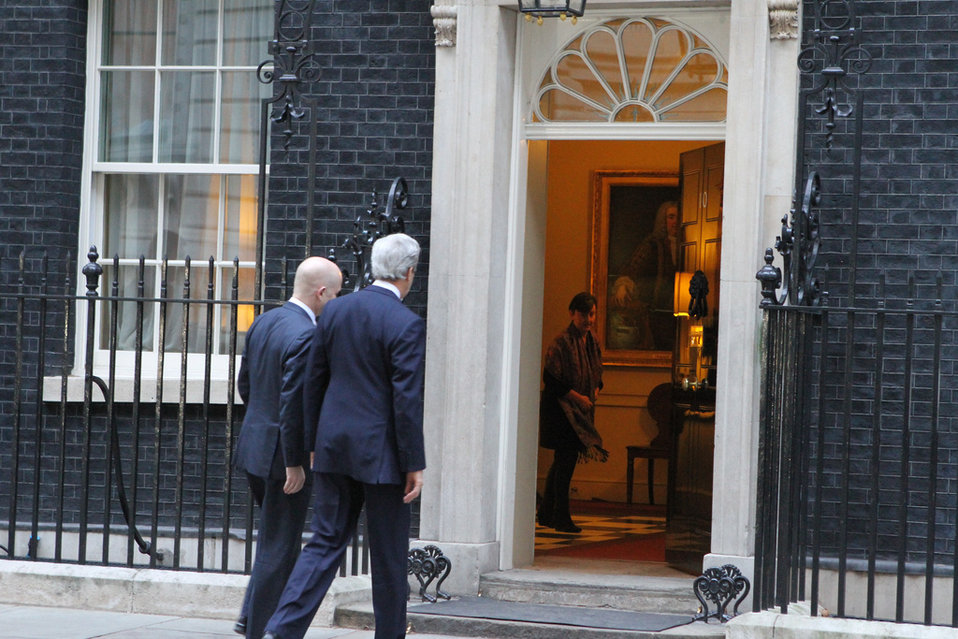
UK Foreign Secretary Hague Accompanies Secretary Kerry to No. 10 Downing Street

UK Foreign Secretary William Hague accompanies U.S. Secretary of State John Kerry to meet with UK Prime Minister David Cameron at No. 10 Downing Street in London, United Kingdom, February 25, 2013.